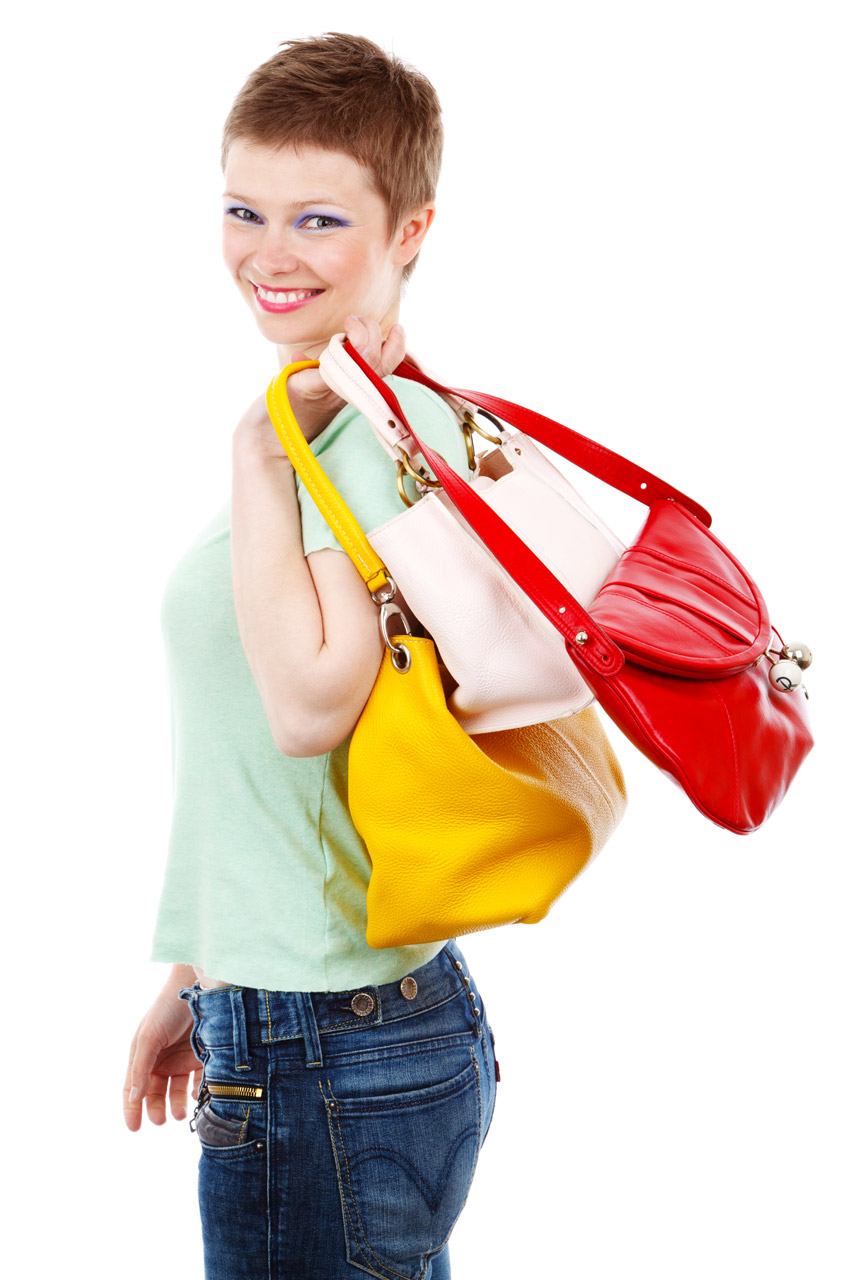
Smiling woman with bags

Happy smiling young woman with colorful bags isolated on white background - jana svojsova.